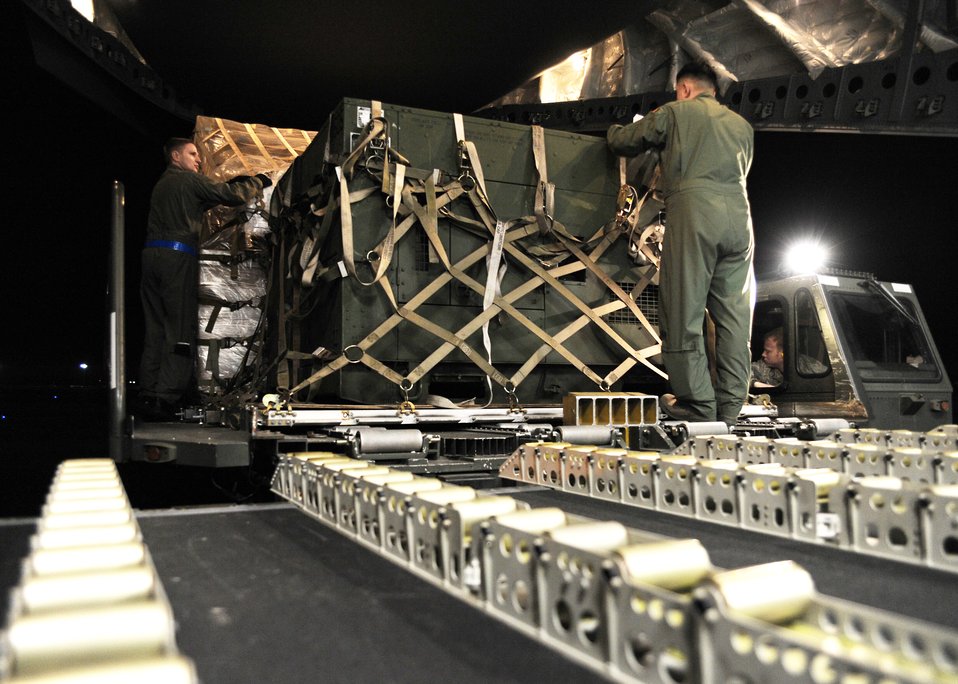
Haiti Humanitarian Effort

Equipment is loaded onto a C-17 Globemaster III at Joint Base McGuire-Dix-Lakehurst, N.J. Jan. 15, 2010, to be transported to Haiti.